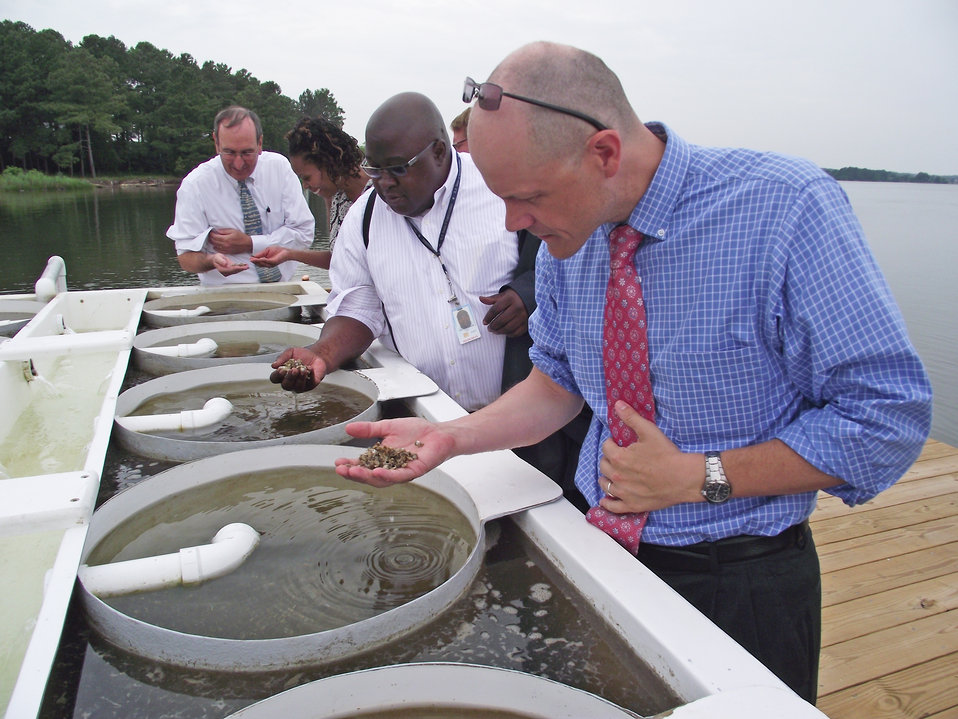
U.S. Department of Agriculture (USDA) Rural Development (RD) Acting Under Secretary Doug O’Brien (foreground) holds a handful of oyster spat. It takes approximately two years in Maryland to grow an oyster. The U.S. Department of Agriculture’s (USDA) Rural Development (RD) agency announced funding support for the Chesapeake Bay Oyster. True Chesapeake Oyster Company will use the funding to support shoreline restoration and repair an existing pier at its oyster growing operation in St. Jerome Creek. Standing next to U.S. Department of Agriculture (USDA) Rural Development (RD) Acting Under Secretary Doug O’Brien (foreground) is Congressman Steny Hoyer (MD) representative Terrance Taylor; Business and Cooperative Program Director Letitia Nichols and The Patapsco Bank President Michael Dee. USDA has guaranteed a bank loan that will help the oyster operation grow and also protect Chesapeake Bay.